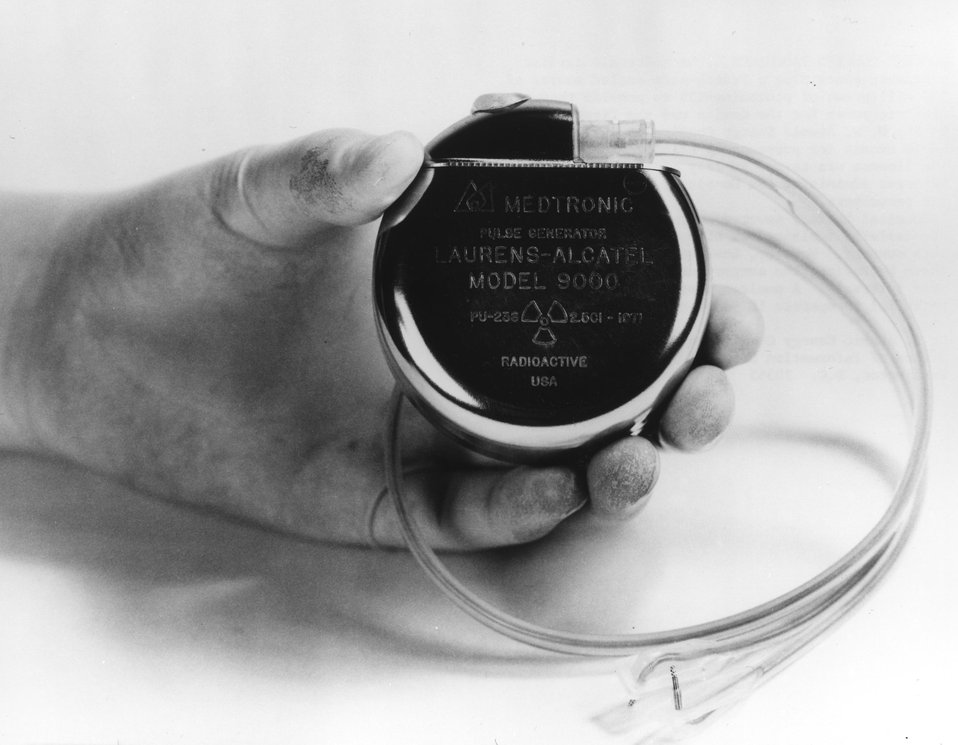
The Medtronic cardiac pacemaker containing a French-made sealed source of 150 milligrams of plutonium-238 to provide thermoelectric power for the device was the first licensed to be implanted in humans for the purpose of clinical evaluation. The license was issued in July of 1972 to the Veterans Administration Hospital, Buffalo, N.Y. for ten pacemakers. Circa 1973.